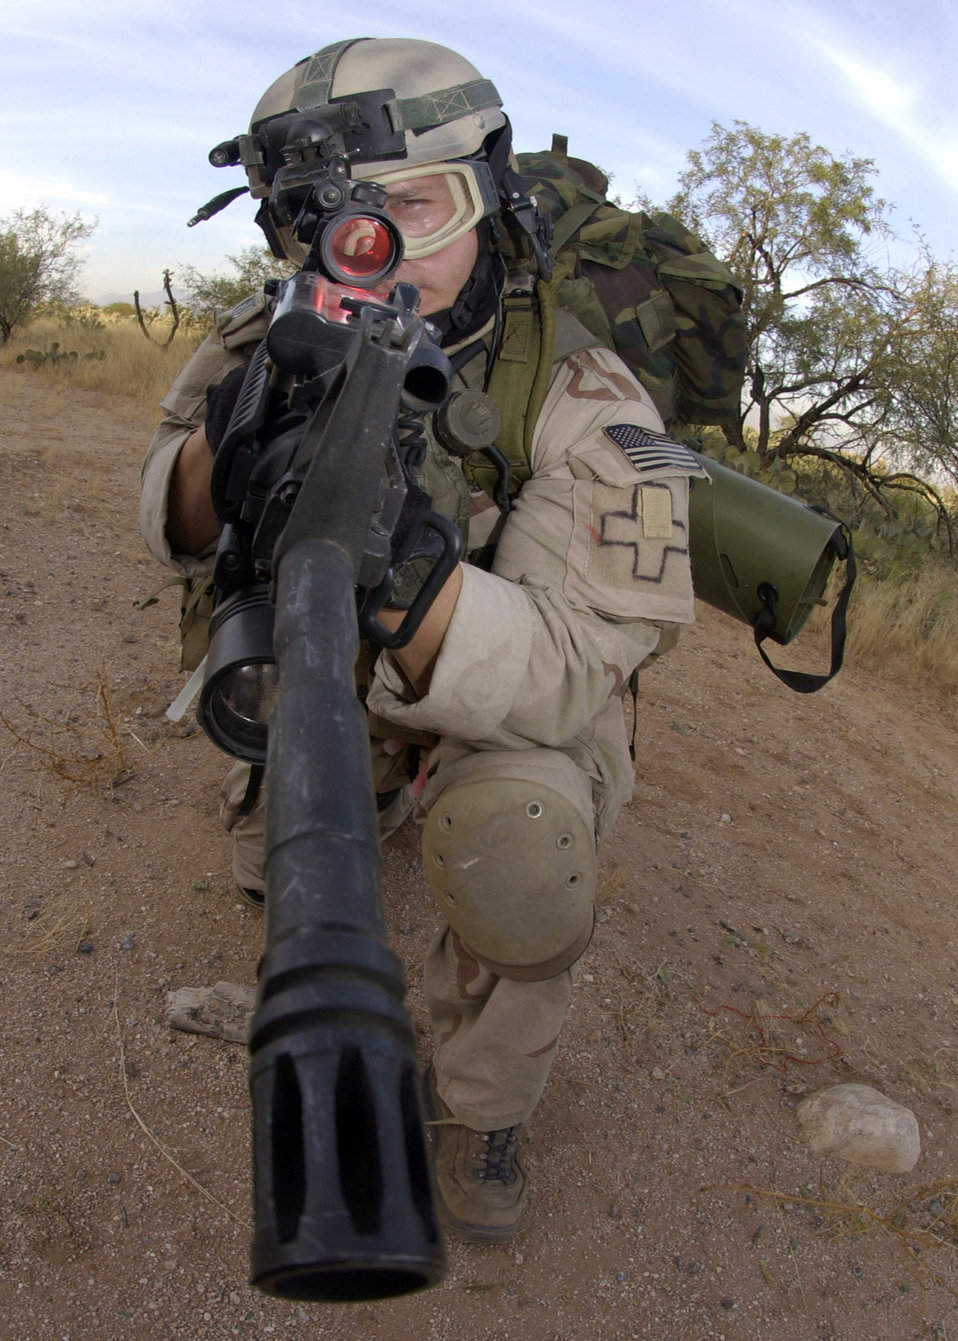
Extraction exercise

DAVIS-MONTHAN AIR FORCE BASE, Ariz. (AFPN) -- Senior Airman Joe Piccoli prepares to retrieve